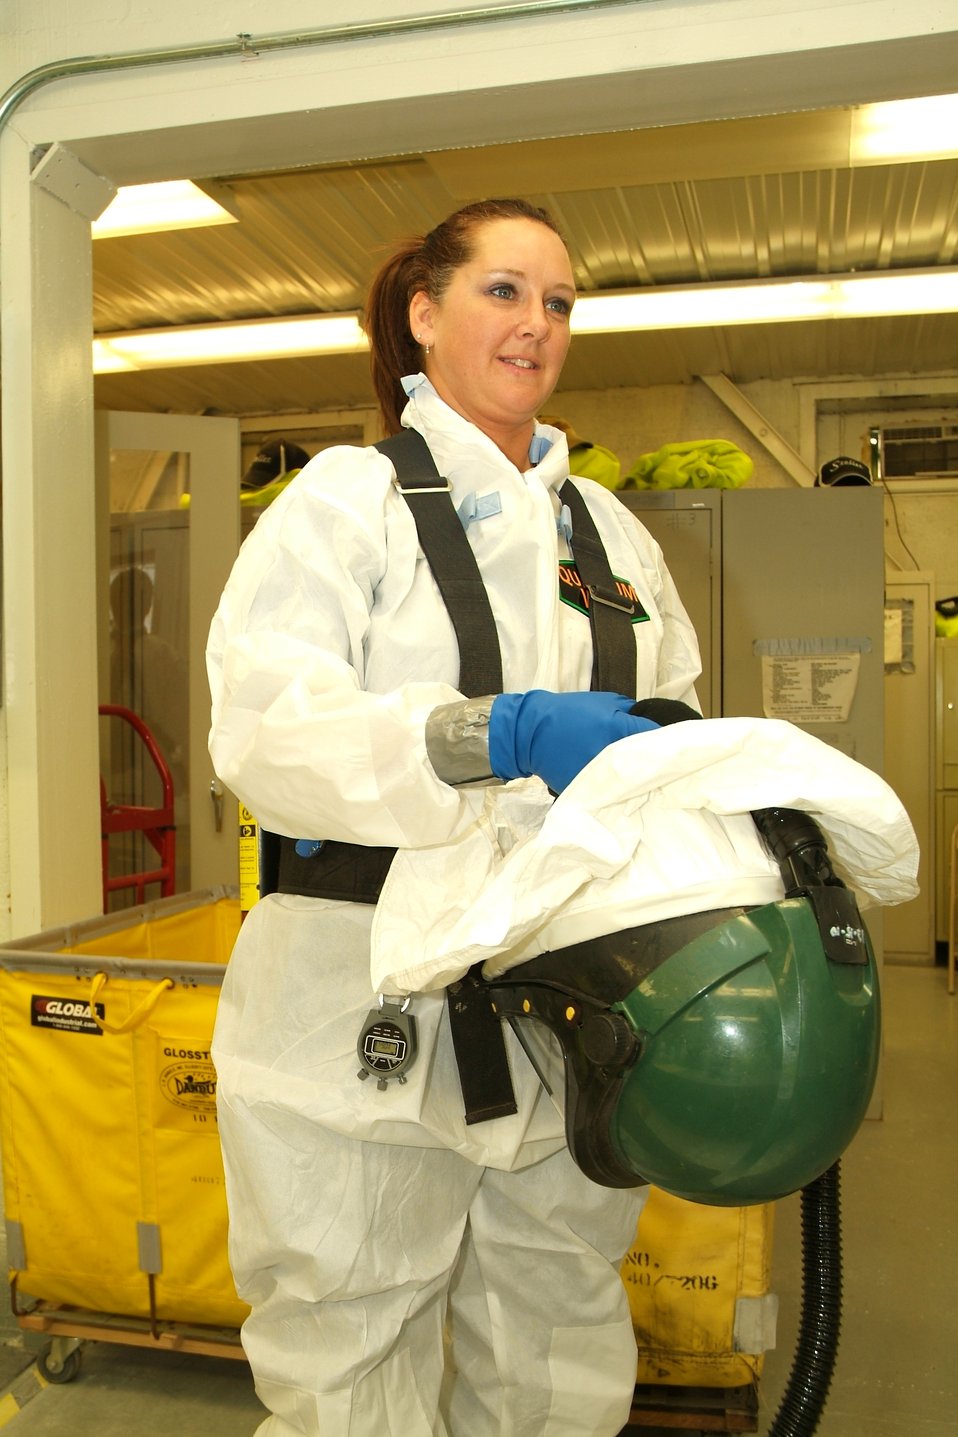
Rebecca Daniels - Paducah

Recovery Act worker Rebecca Daniels, an ex-Marine, is a self-described tomboy who loves the challenge of working amid hazardous chemicals to clean up old buildings at the Paducah Site and prepare them for demolition.

Working in multi-layered protective equipment, Daniels helped remove hydrogen, fluorine and water tanks atop one of two buildings where workers fed uranium hexafluoride into the plant during the Cold War. As is required, Daniels worked in the heavy safety clothing to avoid overheating and guard against hazardous chemical exposure.